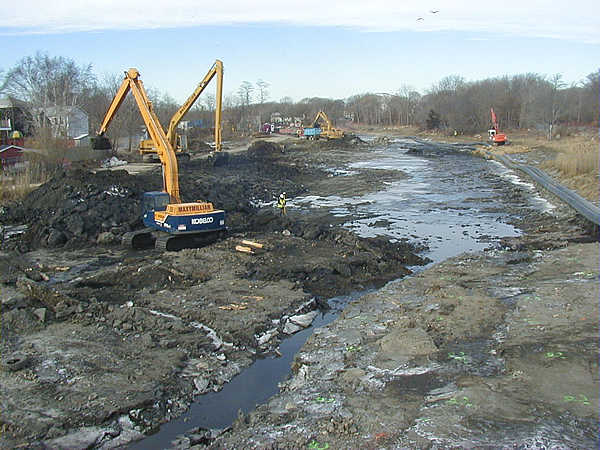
Winter 2003, The 'before' view looking north

From the Wood Street bridge looking north into the Acushnet River excavators worked to dig up some of the highest concentrations of PCBs that were found in the harbor site.

The two pipes in the right hand side of this photo carried the water from the Acushnet River through the diverted section that was undergoing the cleanup action.

The next photo from the same general area shows the improvement after the cleanup.